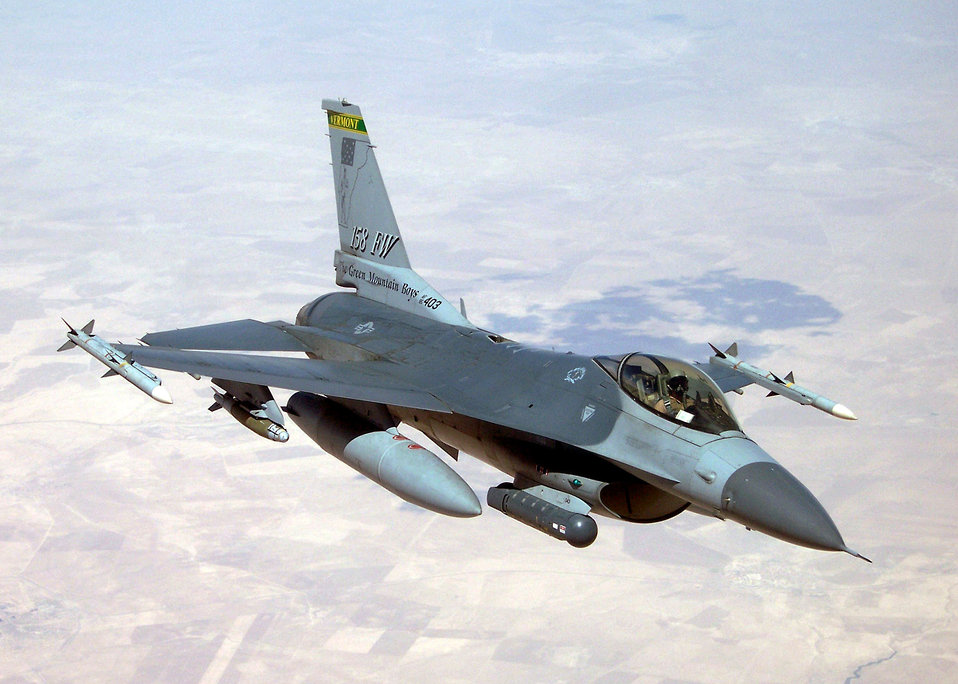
Airpower Summary for Oct. 4, 2007

An F-16 from the Vermont Air National Guard's 158th Fighter Wing provides close air support to coalition forces supporting Operation Iraqi Freedom.